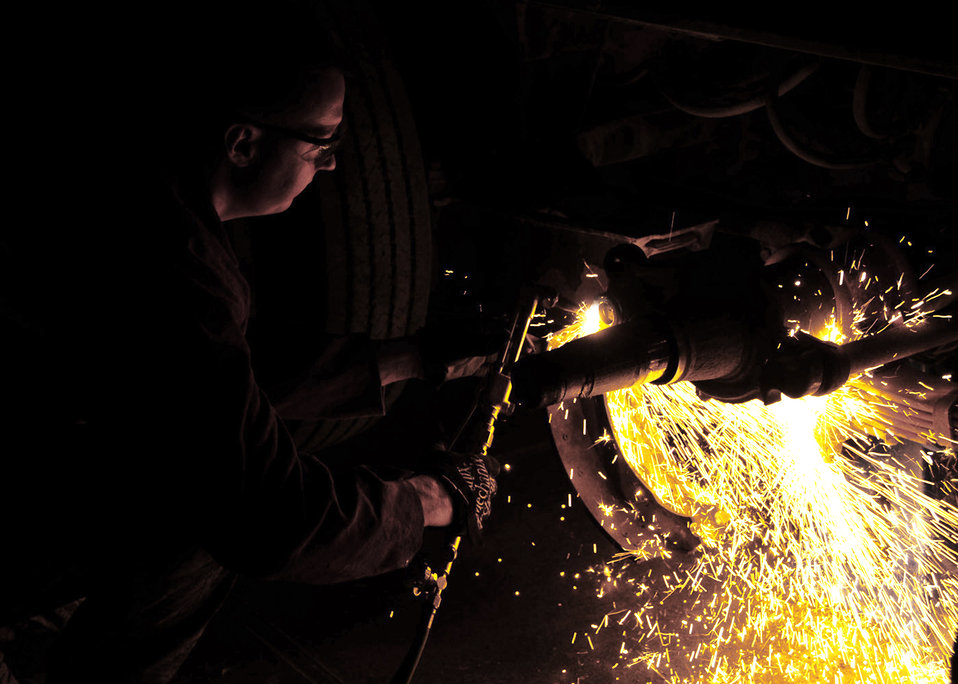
Cutting edge

Staff Sgt. Lukas Wilber uses an oxyacetylene torch to cut off metal to remove a corroded pin from a truck's braking system June 8 at an Army base in Southwest Asia. Sergeant Wilber is a 586th Expeditionary Logistics Readiness Squadron vehicle maintainer from Altus Air Force Base, Okla.